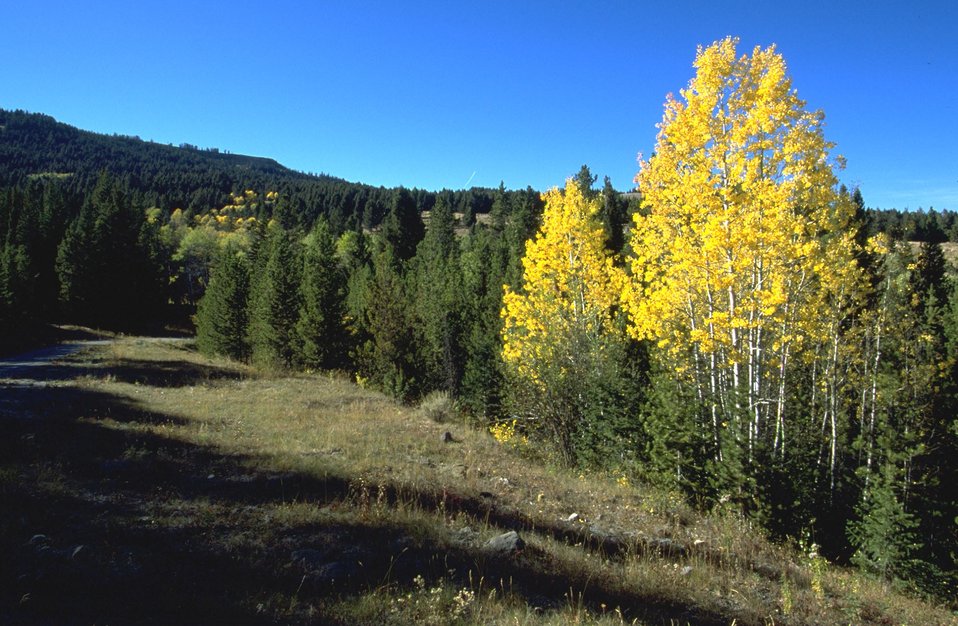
Aspen turning colors along Price Peet Road